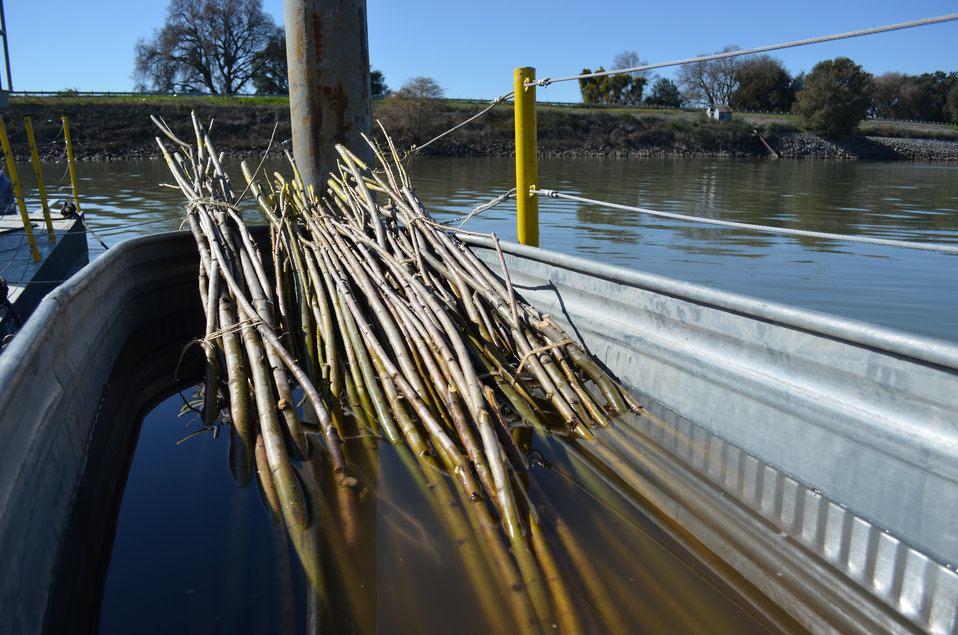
Willow poles ready for planting

Willow poles awaiting planting along the Sacramento River levee near Paintersville, Calif., Feb. 11, 2013 will provide shaded riparian habitat for threatened fish species. The U.S. Army Corps of Engineers Sacramento District project aims to preserve riparian habitat following emergency levee erosion repairs between 2007 and 2009. The district worked with the U.S. Fish and Wildlife Service and National Marine Fisheries Service to design the project for habitat benefit, and is the first Corps district to receive a variance under the Corps’ levee vegetation policy to plant willows near the levee after engineering analysis showed they won’t threaten the levee.